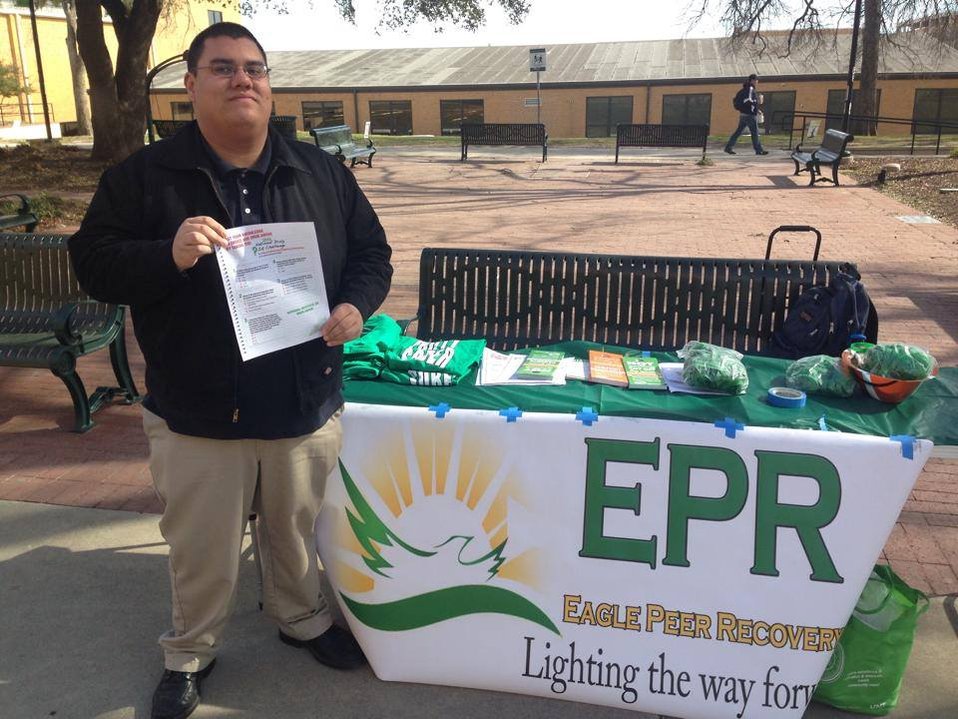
First quiz bowl winner at the University of North Texas Drug Facts week launch event with Eagle Peer Recovery, the Substance Abuse Resource Center, and Young People in Recovery – Texas